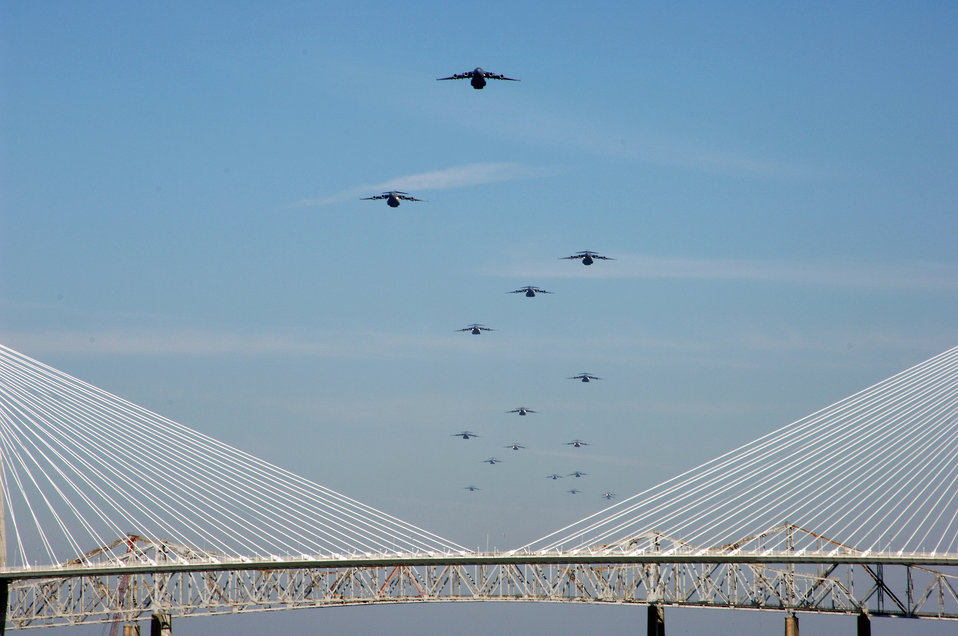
C-17 formation

CHARLESTON, S.C. (AFPN) -- A formation of 17 C-17 Globemaster IIIs assigned to the 437th and 315th Airlift Wings at Charleston Air Force Base fly in formation. The flight, which demonstrates the U.S. Air Force's strategic capability, is the largest formation of C-17s to take flight from a single base.